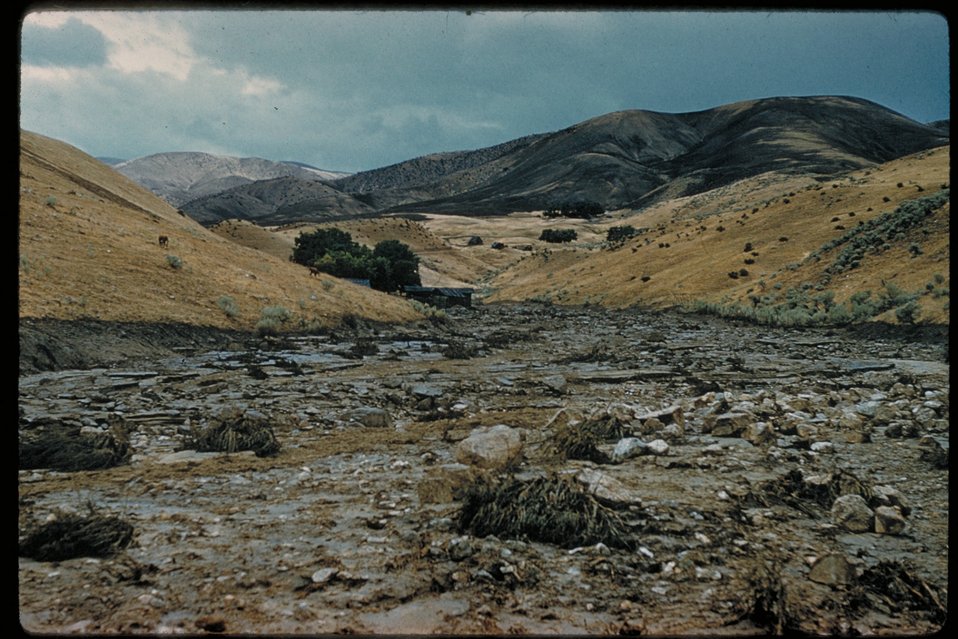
Fire Rehab Boise Front Four Rivers Field Office LSRD Lower Snake River District